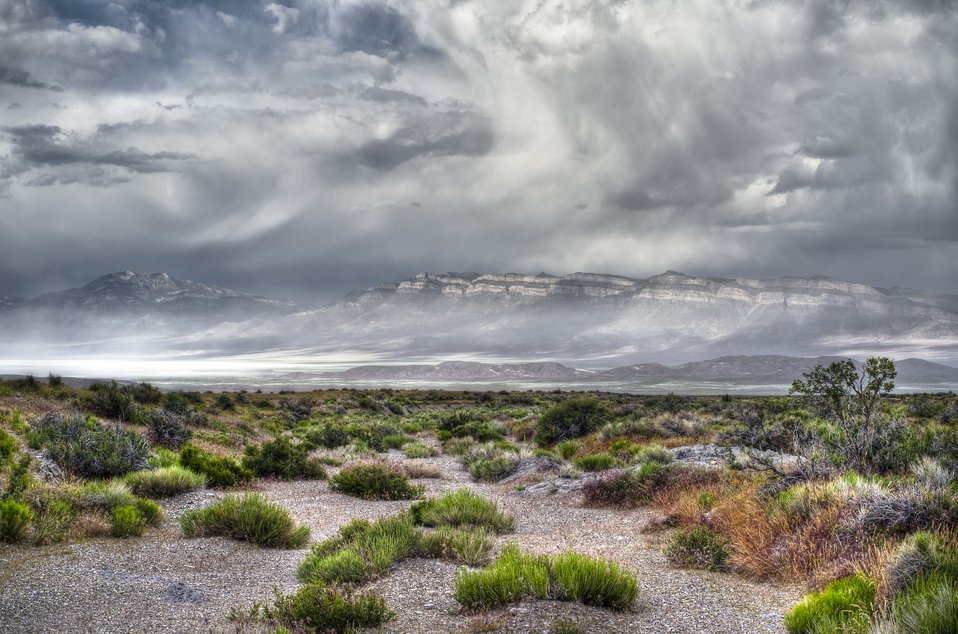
1st Place - Spring Storm in the Great Basin

The Great Basin is located on the Western edge of the Mountain-Prairie Region, and is situated in Oregon, Utah, Nevada and Idaho. It is characterized by basin and range geology with high, dry deserts separated by high mountain ranges.

Credit: Larry Crist / USFWS

Photo Contest Entry #156